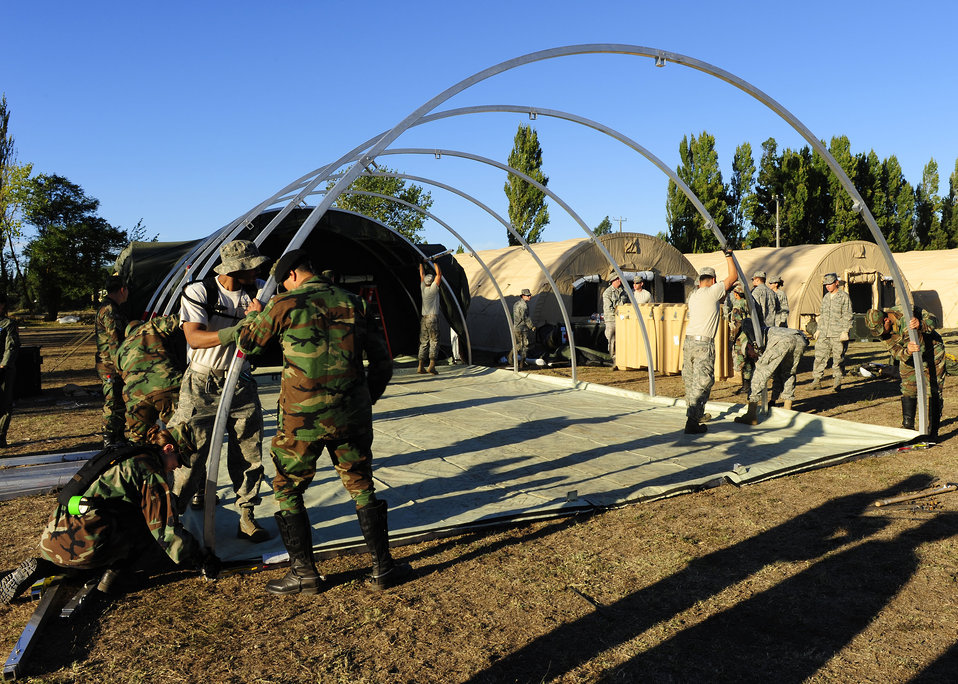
Airmen expand local hospital to meet Chileans’ medical needs

Chilean soldiers help Airmen from an Air Force Expeditionary Medical Support team erect an additional hospital tent March 12, in Angol, Chile. The additional tent will help meet the medical needs of the local community.